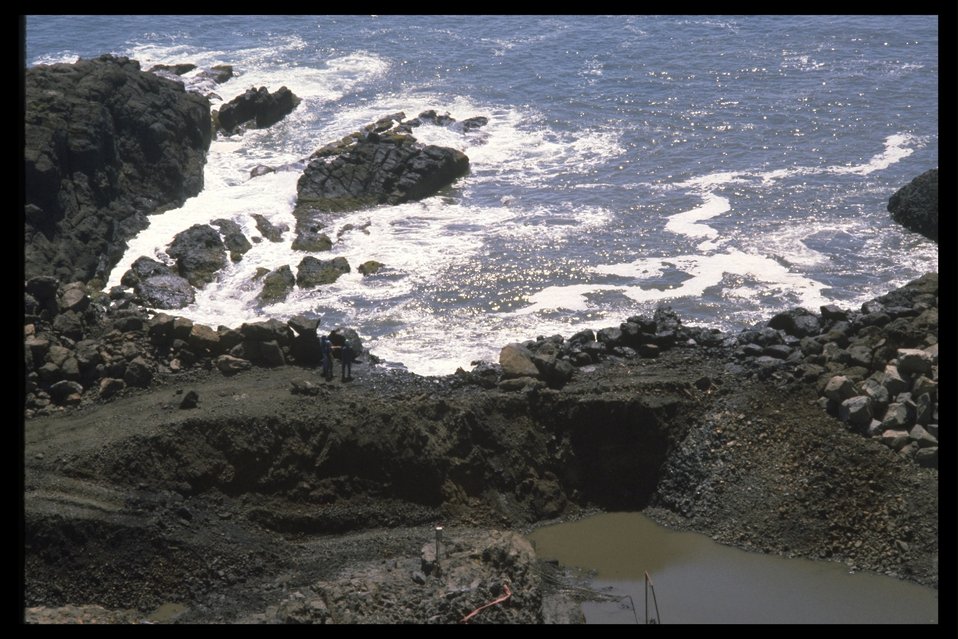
Construction of Quarry Cove tidepools.